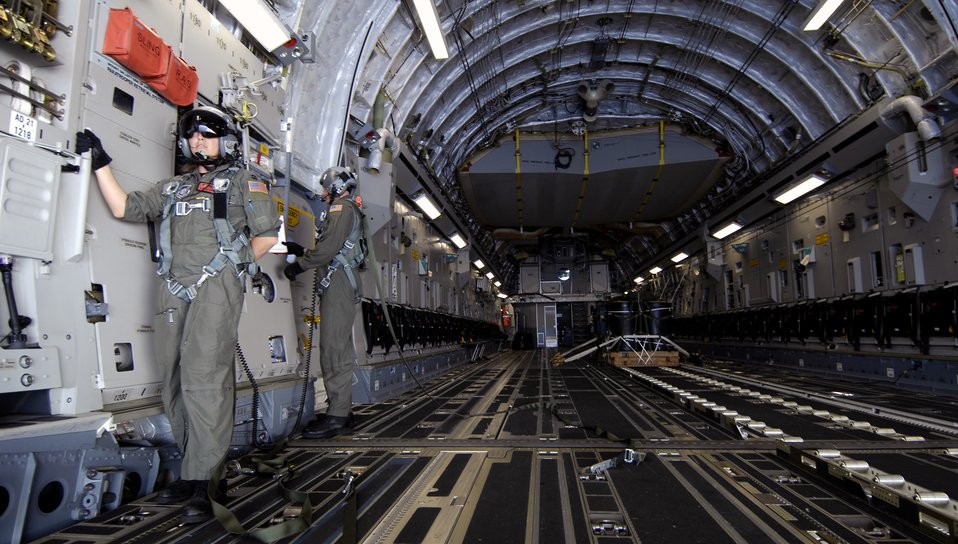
Airlift training

Capt. Stephanie Boff and Tech. Sgt. Ansen Lucas prepare to drop a practice bundle from a C-17 Globemaster III during an airdrop training mission July 16 over Hawaii. The Airmen are with the 535th Airlift Squadron at Hickam Air Force Base, Hawaii.